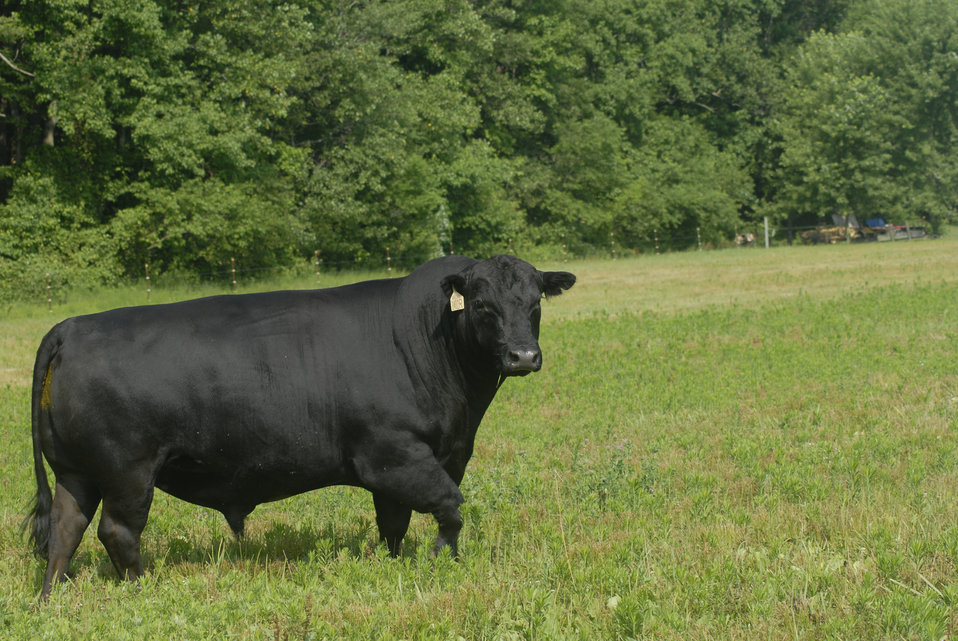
An Angus bull meanders along on a field on a Delaware farm on July 7, 2008.